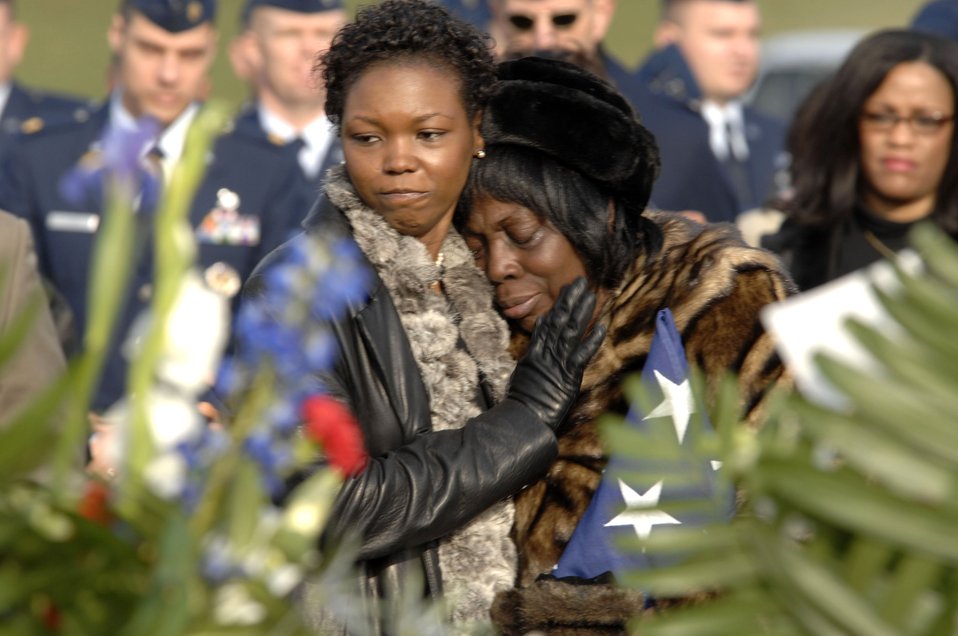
One final salute

Margaret Evans (right) is comforted by a family member at the conclusion of the funeral for her son, Capt. Kermit Evans, Dec. 12 at Arlington National Cemetery. More than 200 friends and relatives gathered to pay their respects to Captain Evans. Captain Evans was a member of the 27th Civil Engineering Squadron Explosives Ordnance Disposal Flight at Cannon Air Force Base, N.M. He was deployed to Iraq when the helicopter he was a passenger in made an emergency landing and crashed. He was one of the four out of 16 who were killed as a result of the crash. He is srvived by his wife, Perneatha, and Kermit Jr., their 13-month-old son.